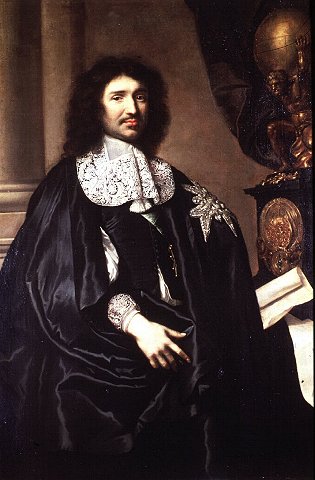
Colbert-5